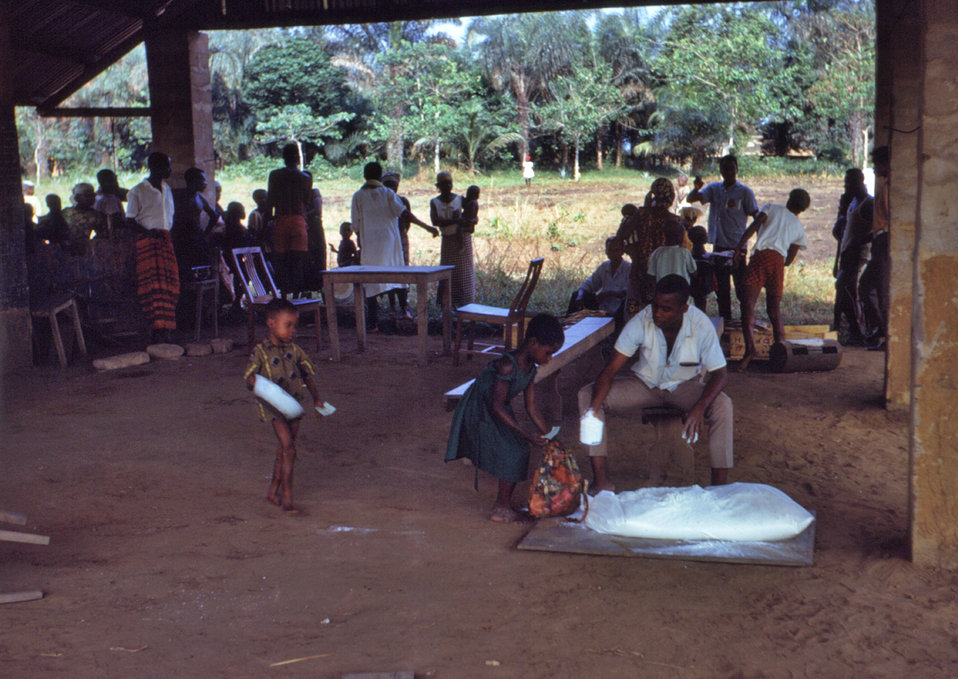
During the Nigerian-Biafran civil war, many Nigerian schools, like the one in this photograph, were used as clinics, or food distribution points for refugees.